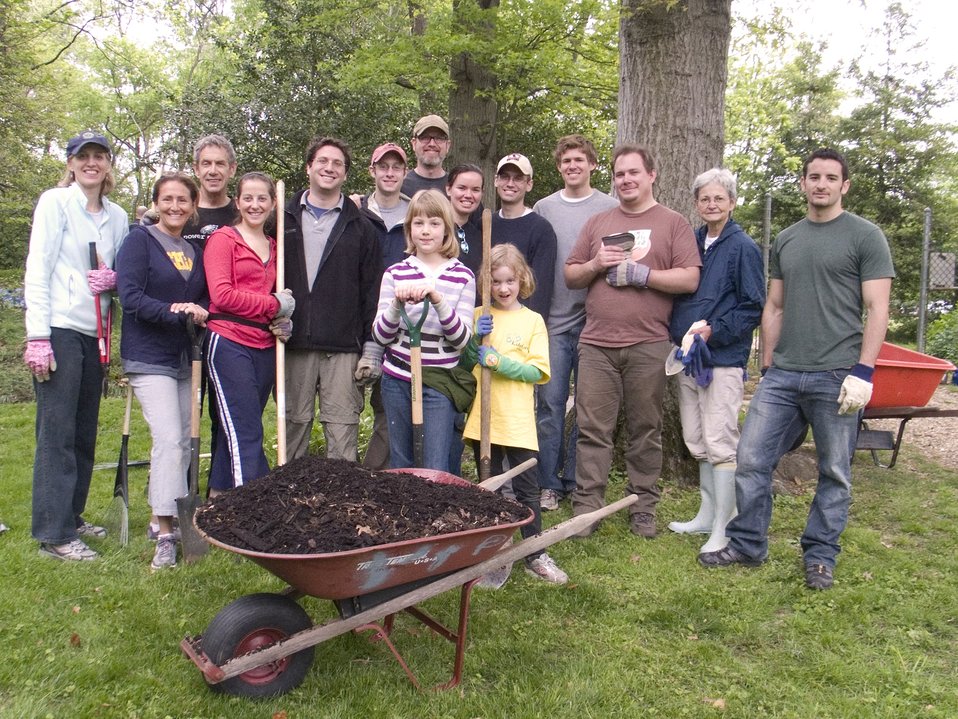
U.S. Department of State volunteers join in Earth Day Volunteer Effort by helping the Anacostia River Watershed Society, April 24, 2010, Washington, D.C.